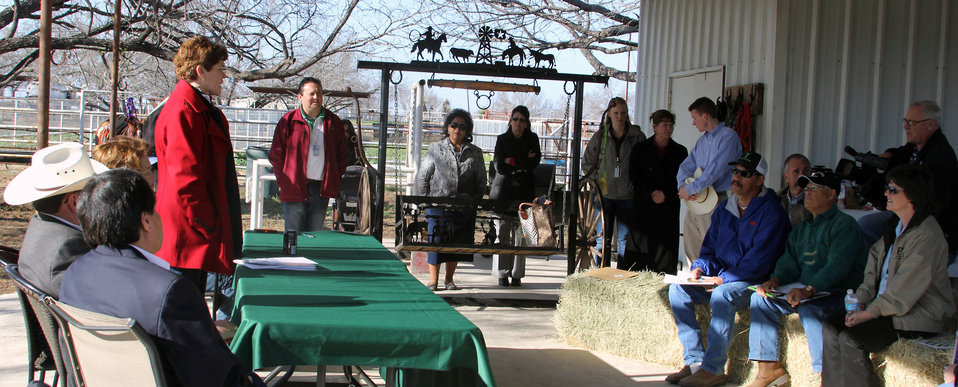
U.S. Department of Agriculture (USDA) Texas agency leaders, including Rural Development (RD) Daniel Torres, Texas State Conservationist, Natural Resources Conservation Service (NRCS) Salvador Salinas, and Texas State Executive Director Judith Canales, join Agriculture Deputy Secretary Krysta Harden as they visit with South Texas farmers and ranchers about Strikeforce at Miguel Ruiz’s ranch in Lytle, TX on Thursday, Feb. 27, 2014.